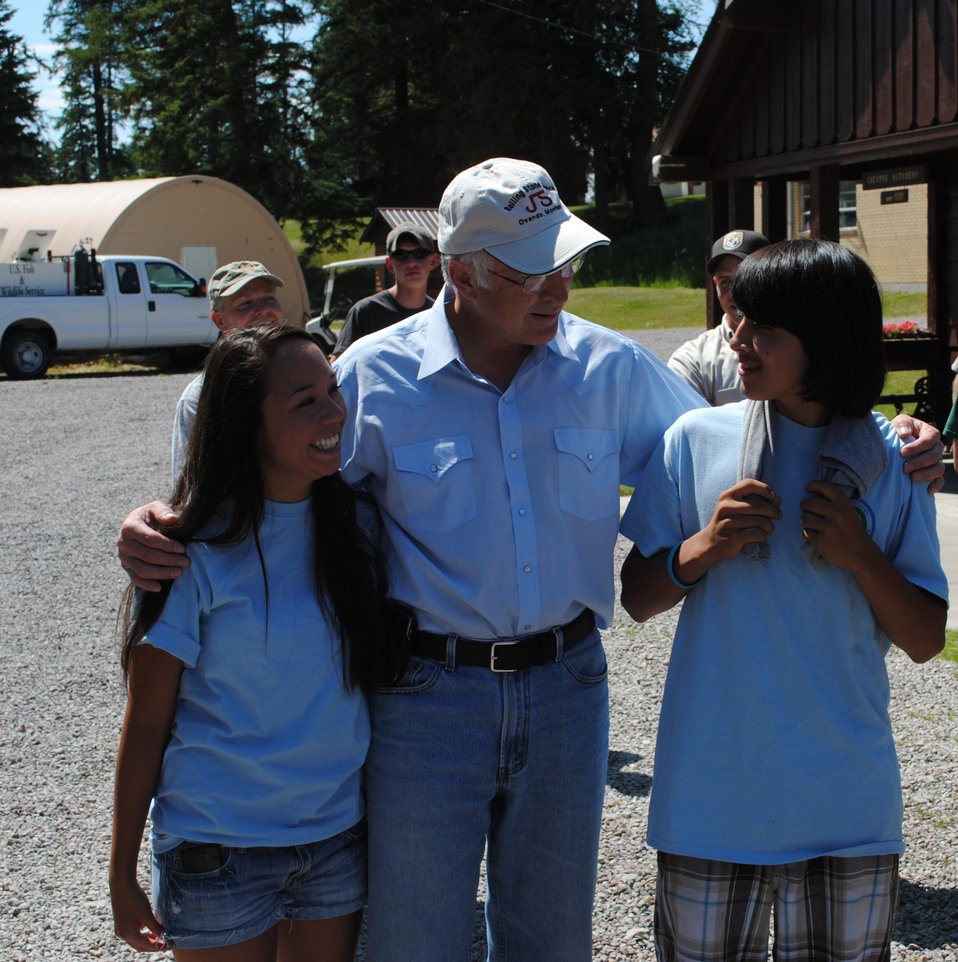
Secretary Salazar with Northwest Montana Native Youth Conservation Corps Youngsters

Mark Maskill: 'Secretary Salazar and Director Ashe talked to the group about careers with the Fish and Wildlife Service and also gave the kids special attention which enthused them, and really fired them up, gave them a sense of worth. The kids appreciated the visit and that the Secretary and Director took time out of their very busy schedules to meet with them, asking questions and learning more about their programs.'